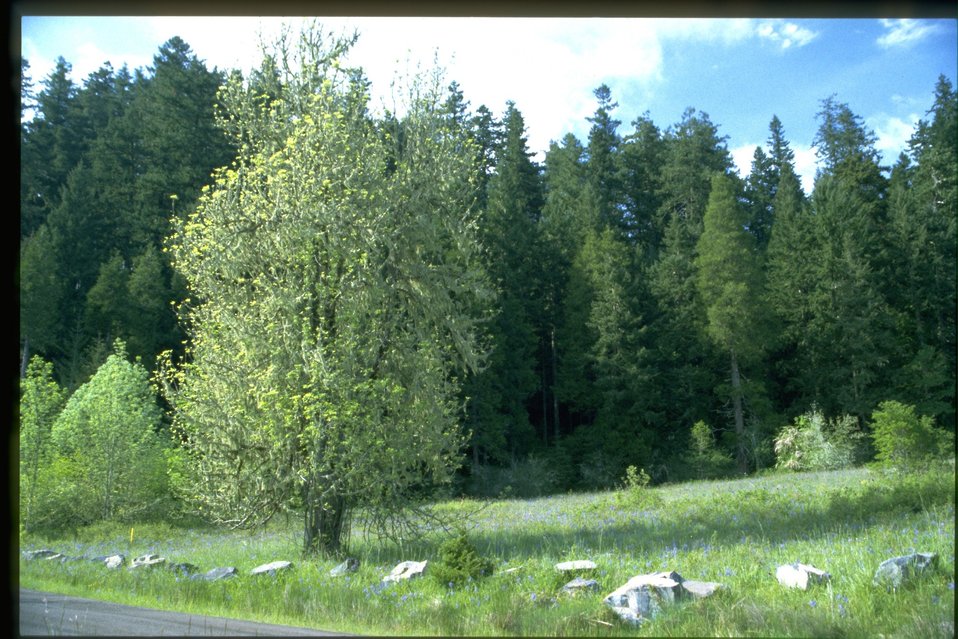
McGowan Meadow.